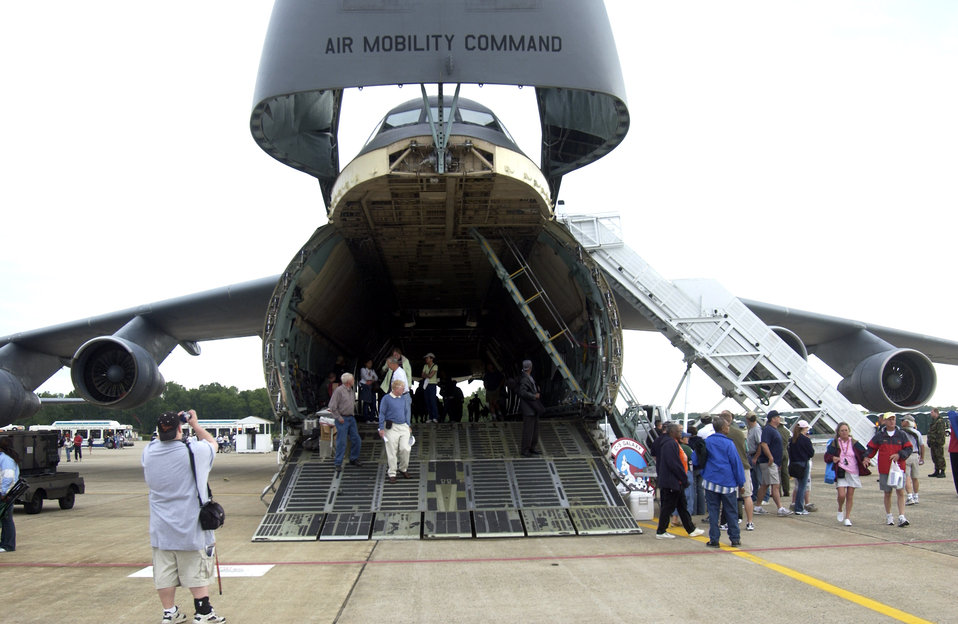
2006 Joint Service Open House

A C-5 Galaxy from Travis Air Force Base, Calif., attracts visitors during the 56th annual Department of Defense 2006 Joint Service Open House at Andrews Air Force Base, Md., on Saturday, May 20, 2006. The three-day event highlighted American aviators, aircraft and technology.